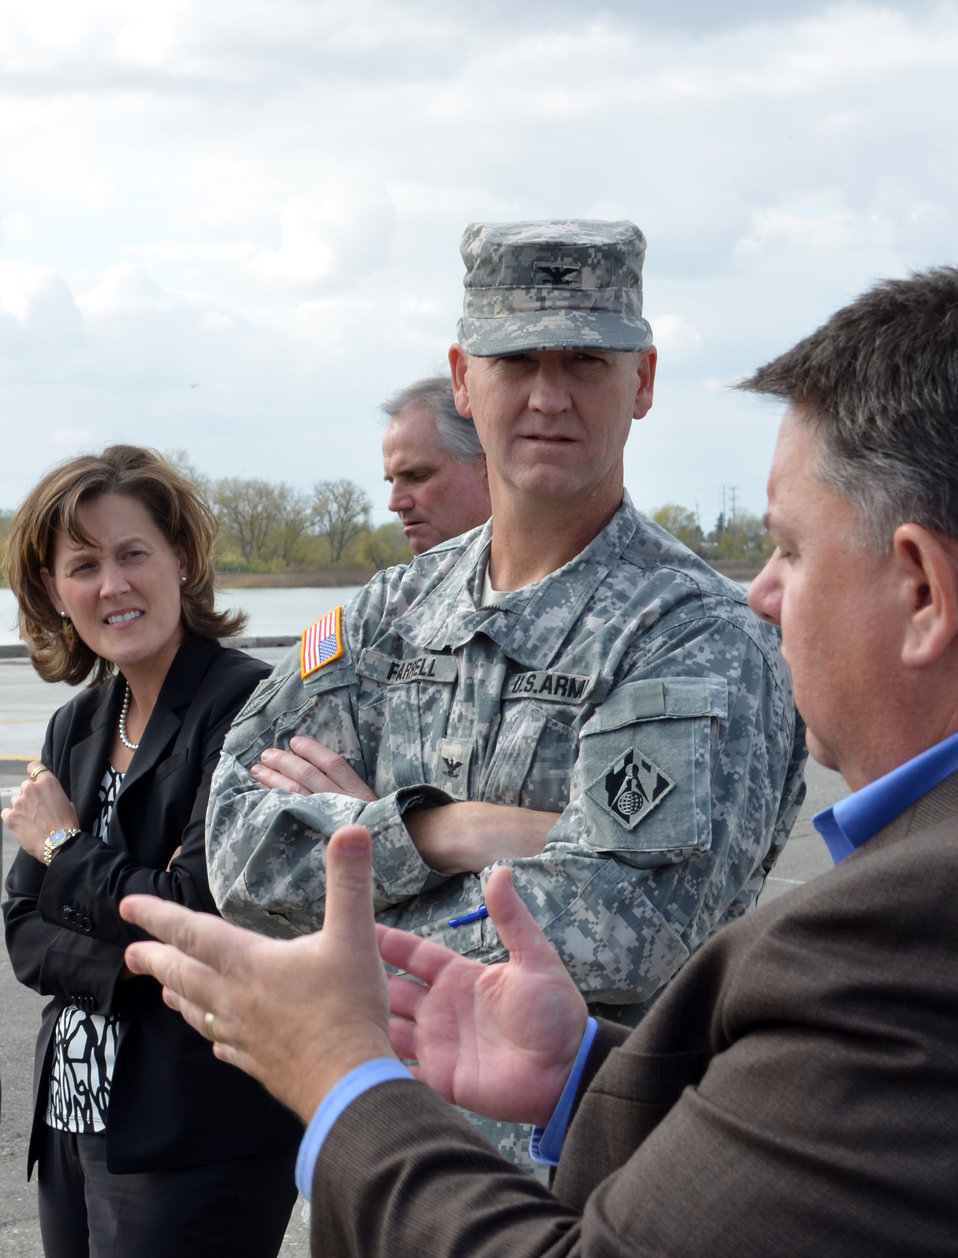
Col. Farrell tours West Sacramento projects

U.S. Army Corps of Engineers Sacramento District representatives, including (from left) Tambour Eller, deputy district engineer for programs and project management, and Col. Michael Farrell, commander; listen as Mike Luken, transportation manager for the City of West Sacramento, explains the role dredging plays in Port of Sacramento operations Oct. 29, 2013. The Sacramento District conducts annual maintenance dredging along the deep water ship channel to allow ships to safely navigate the route to the port. Image cropped for emphasis.